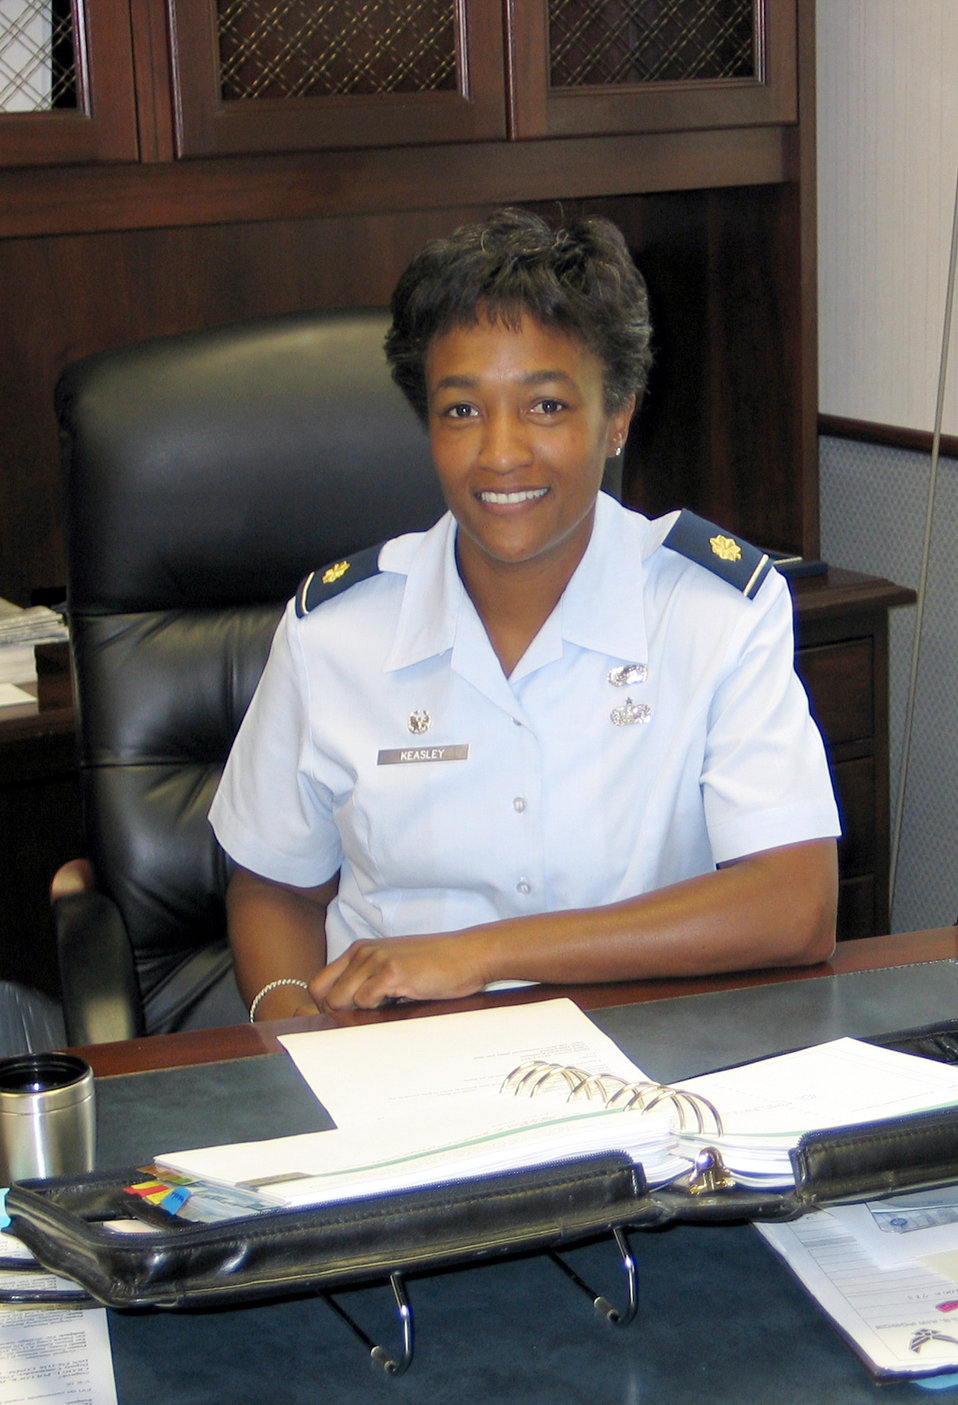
Twin sisters assume command of AMC squadrons

SCOTT AIR FORCE BASE, Ill. -- Maj. Dawn Keasley is the new commander of the 375th Mission Support Squadron here. Her twin sister, Maj. Shawna O'Brien, took command of the 319th MSS at Grand Forks Air Force Base, N.D., on the same day.